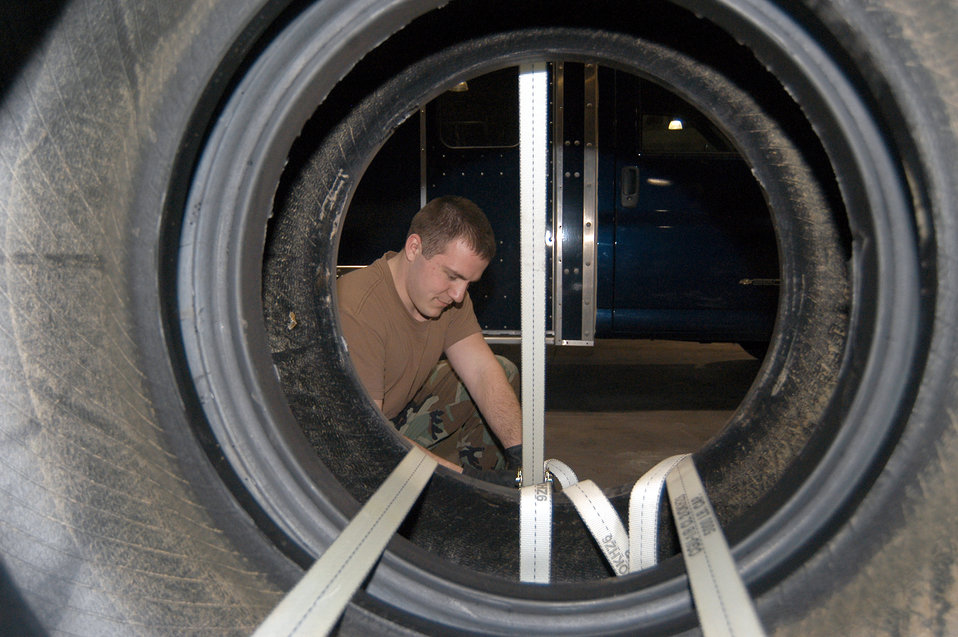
Clamping down

DOVER AIR FORCE BASE, Del. -- Airman 1st Class Mike Dunn, of the 436th Aerial Port Squadron fleet services, tightens a strap to secure a tire to a pallet here. Airman Dunn is an activated reservist from the 76th Aerial Port Squadron at Youngstown Air Reserve Station, Ohio. He and 25 other Airmen of the 76th APS will work in the 436th APS for the next year.